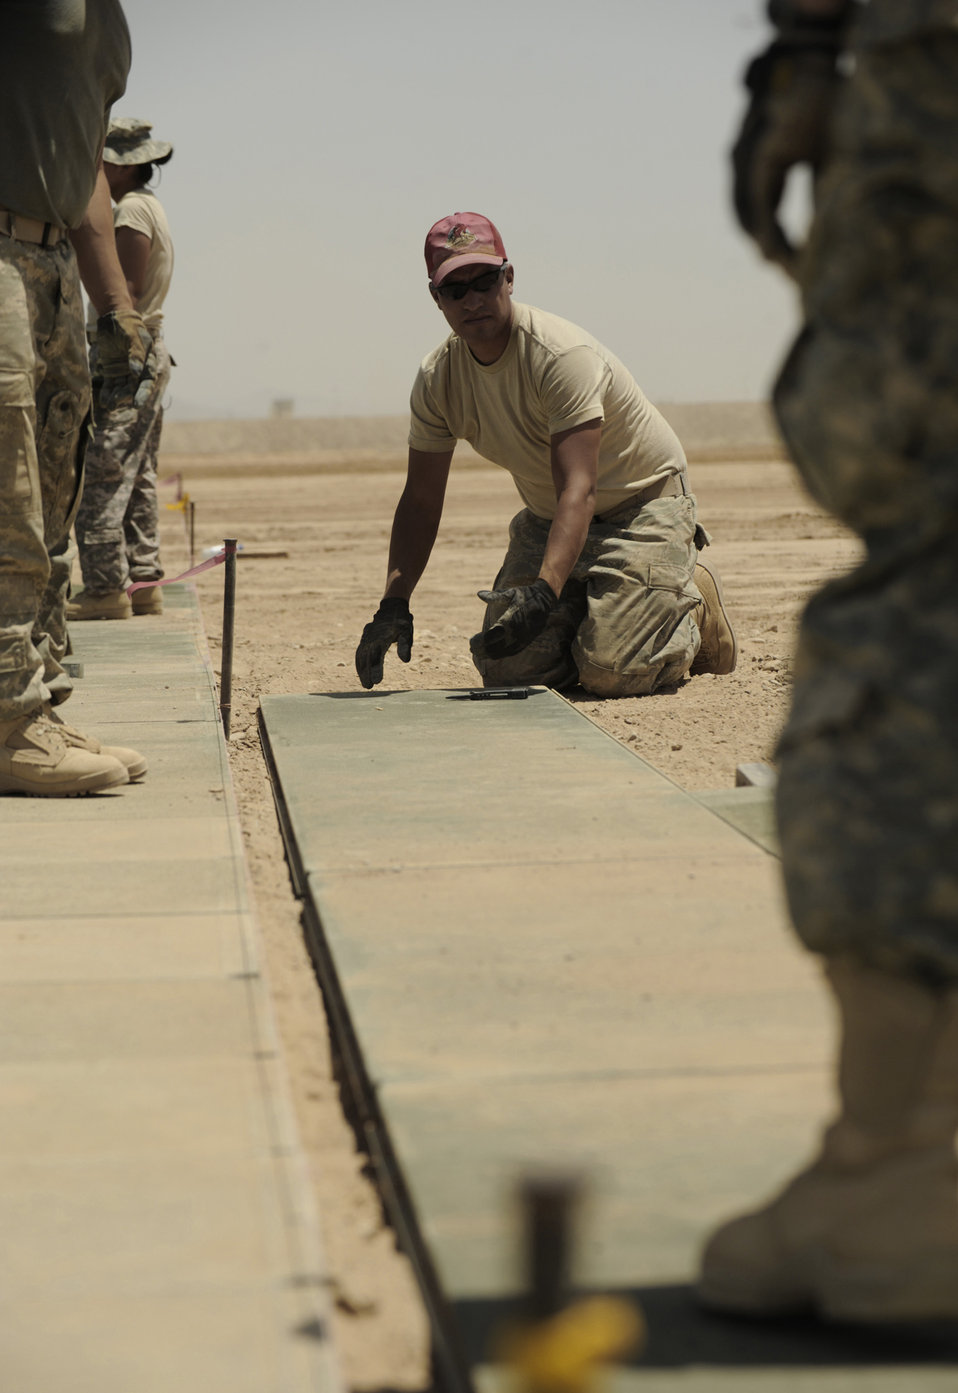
RED HORSE team serves as 'backbone' of Afghanistan construction

Staff Sgt. Michael Zamora prepares AN2 matting May 17 at Kandahar Airfield, Afghanistan. The ramp will be used to bed down combat aviation brigade helicopter units. Sergeant Zamora is an 819th Expeditionary RED HORSE Squadron civil engineer electrician.